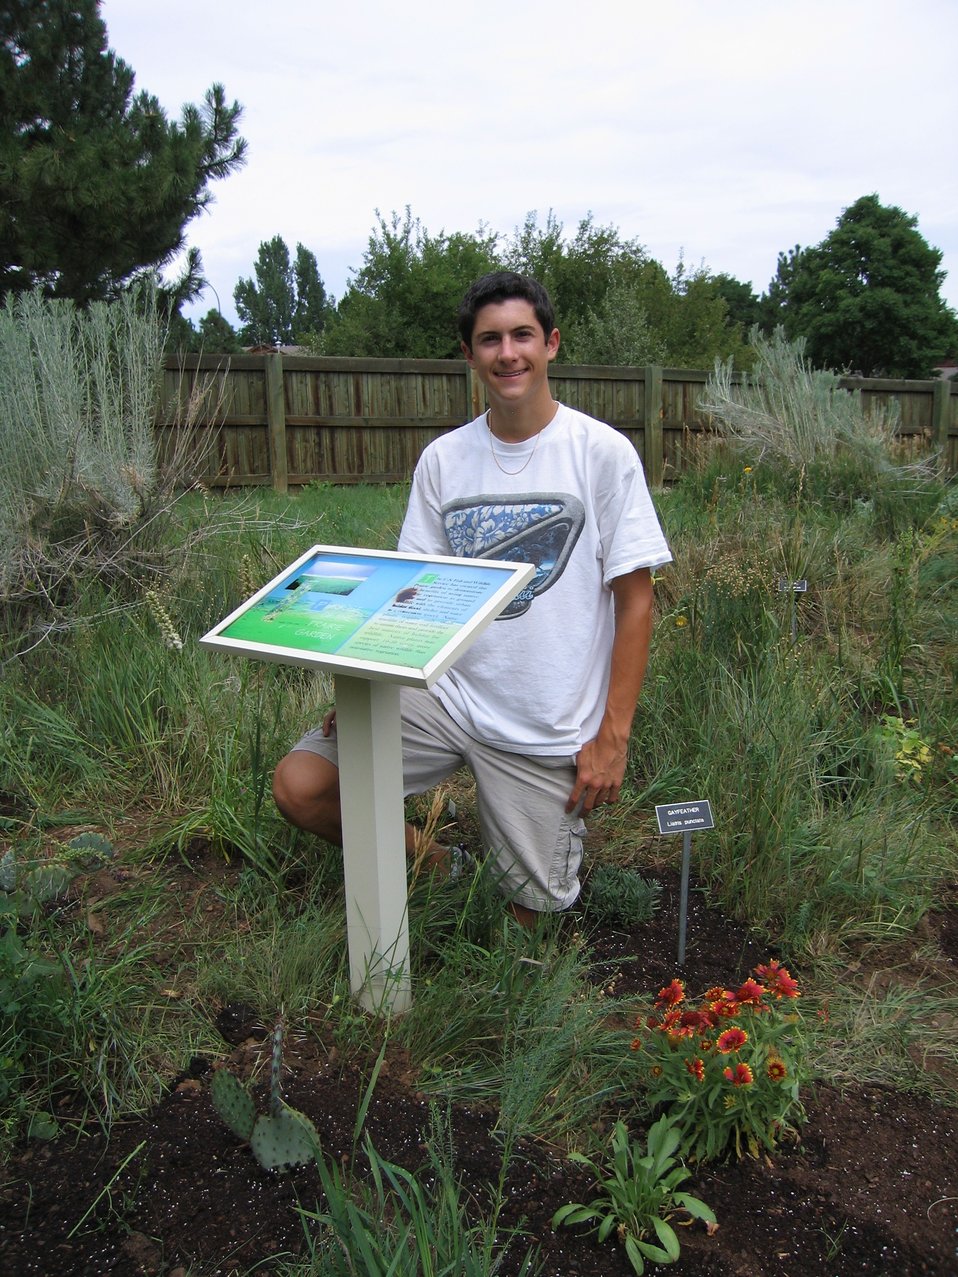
Eagle Scout - Prairie Garden